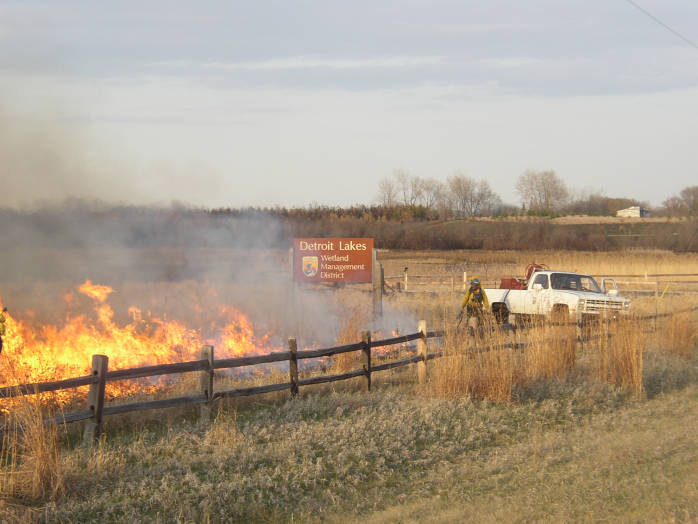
Prescribed Fire with Refuge Sign